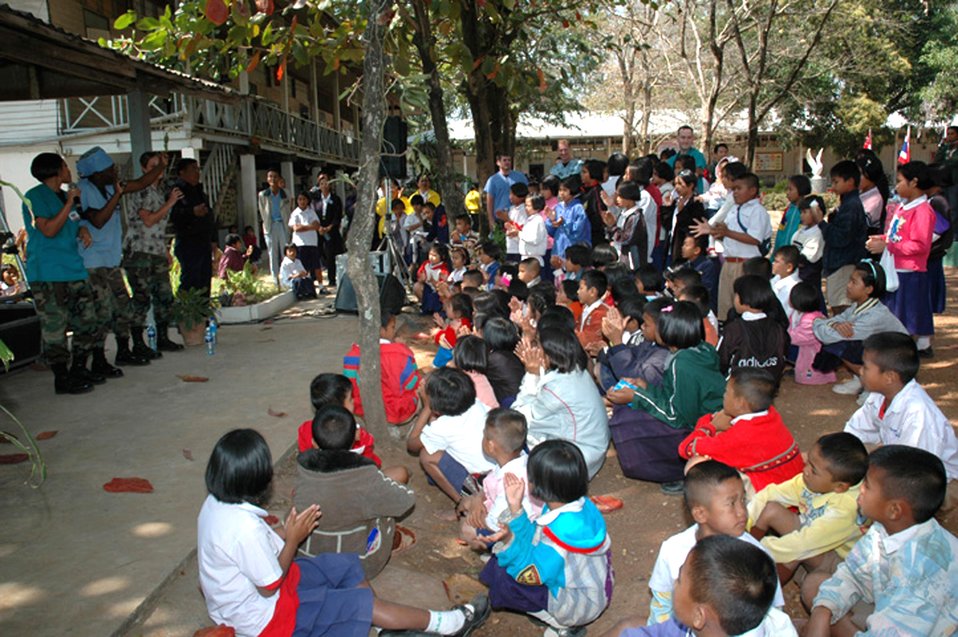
Cope Tiger participants provide humanitarian assistance

The U.S. dental staff takes time out of the day to entertain students of the Ban Chaimongkon school Jan. 30 in Korat, Thailand. Medical members from the United States, Thailand and Singapore air forces performed medical, dental and eye exams for members of the school community. Military members from the three countries took part in a humanitarian mission at the school as part of Exercise Cope Tiger 2007.